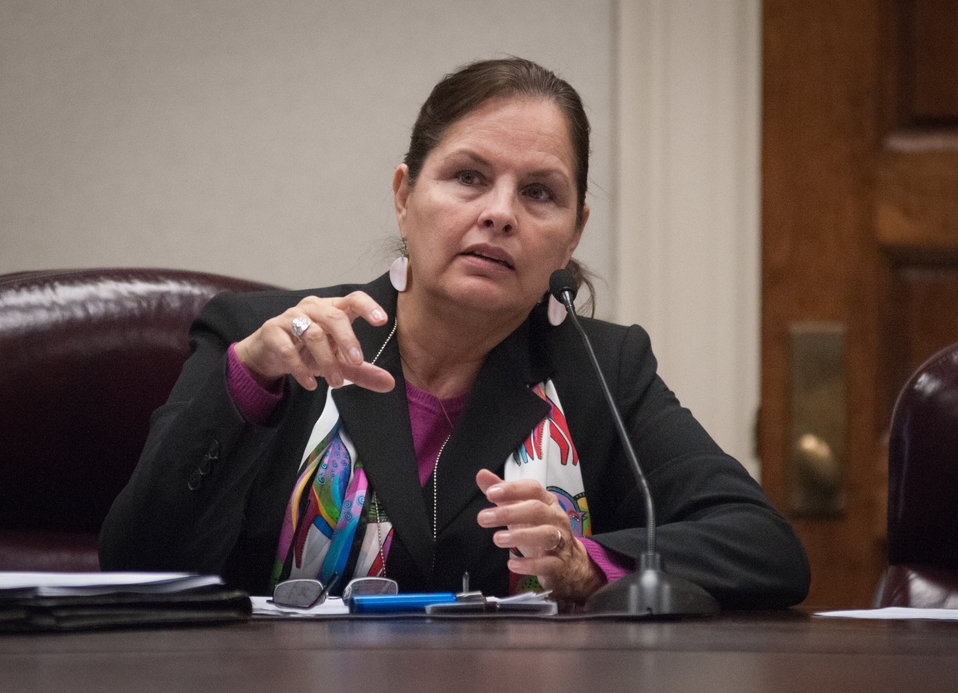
Cankdeska Cikana Community College President Cynthia Lindquist, Fort Totten, North Dakota, presents some of her college's needs to U.S. Department of Agriculture Senior Advisor to the Secretary on Tribal Relations and Office of Tribal Relations Acting Director Max Finberg, during the USDA and American Indian Higher Education Consortium Leadership Group Winter Meeting, at the USDA Whitten Building Williamsburg Room, in Washington D.C., on Friday, Feb. 8, 2013.